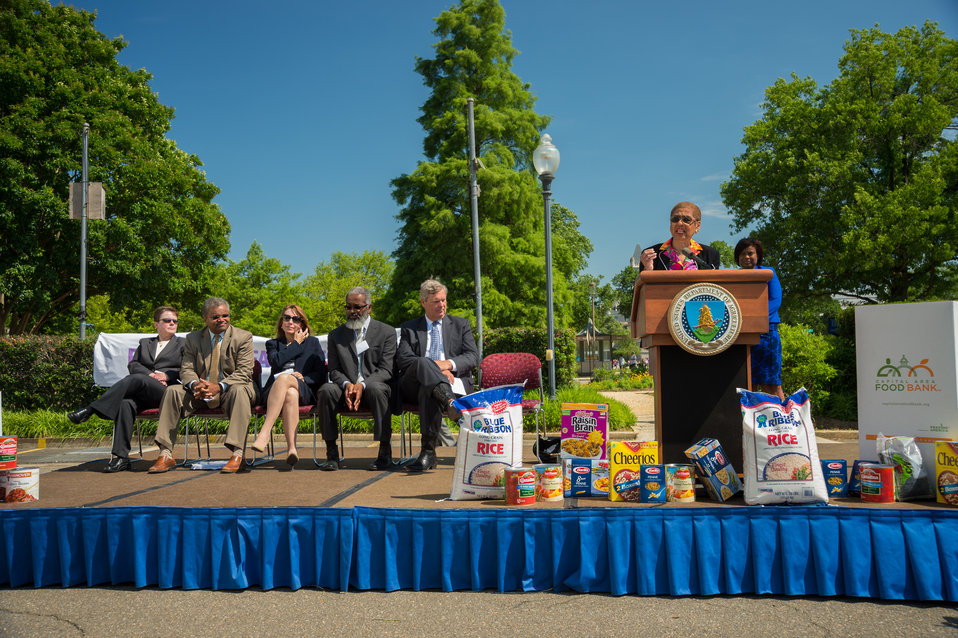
Congresswoman Eleanor Holmes Norton thanked Federal employees for their dedication to helping those in need by donating food during the 2014 National Feds Feed Families Campaign at the United States Department of Agriculture’s (USDA’s) People’s Garden in Washington, DC, Mon. Jun. 2, 2014. The theme of this year’s event is, “Help Knock Out Hunger.” The U.S. Department of Agriculture will lead the campaign with the support of the Chief Human Capital Officers Council and other agency partners, which officially begins on June 1 and will run through August 27, 2014. On stage behind Congresswoman Norton are Pamela Mitchell, Deputy Chief Human Capital Officer, Department of Defense, Mathy Stanislaus, Assistant Administrator for the Office of Solid Waste and Emergency Response, Environmental Protection Agency, Nancy Roman, President and Chief Executive Officer, Capital Area Food Bank, Dr. Gregory Parham, Assistant Secretary for Administration and Agriculture Secretary Tom Vilsack.